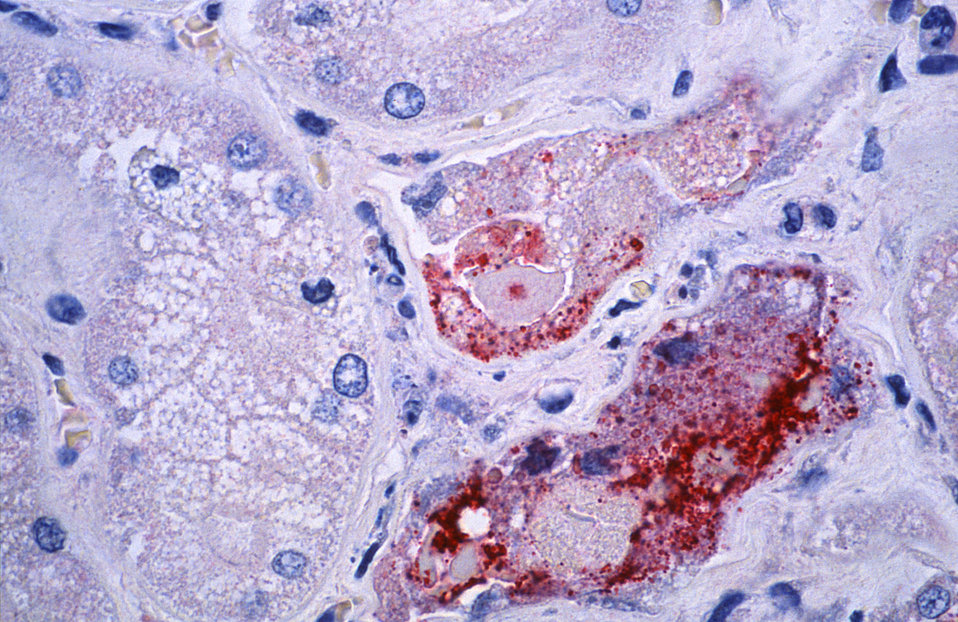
Using immunohistochemical (IHC) technique, this photomicrograph revealed some of the cytoarchitectural histopathologic changes associated with a Nipah virus infection, in this case, affecting an unknown animal's kidney tubules.